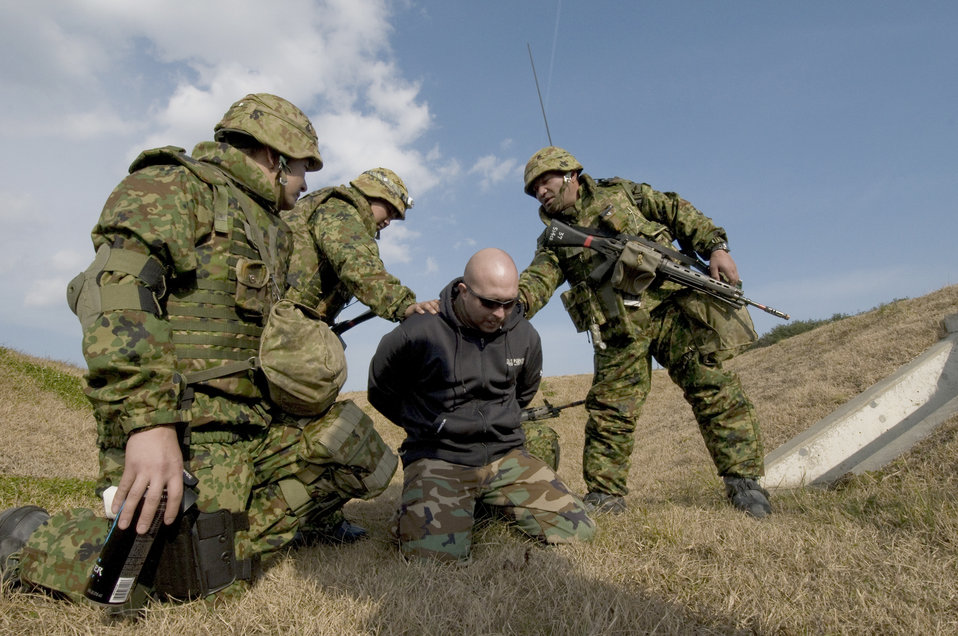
Guard and Protect

Soldiers from Japan Ground Self-Defense Force, 9th Division, 5th Infantry Regiment, Aomori, apprehend Tech. Sgt. George Shepherd during a bilateral exercise Dec. 5, 2010, at Misawa Air Base, Japan. The JGSDF troops were part of a two-day Guard and Protect Exercise that partnered them with the Japan Air Self-Defense Force 3rd Air Wing and the 35th Security Forces Squadron. Sergeant Shepherd is a 35th Security Forces Squadron member and opposing forces volunteer.